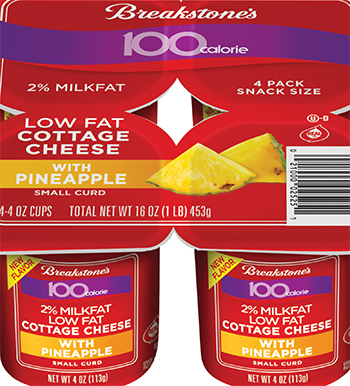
RECALLED – Cottage Cheese products

May 17, 2014 – Product Recall – Kraft Foods Group Voluntarily Recalls Select Cottage Cheese Products Due to Out-of-Standard Storage Temperatures
Certain Knudsen Cottage Cheese, Breakstone’s Cottage Cheese, Simply Kraft Cottage Cheese and Daily Chef Cottage Cheese Products Included in the Recall
.